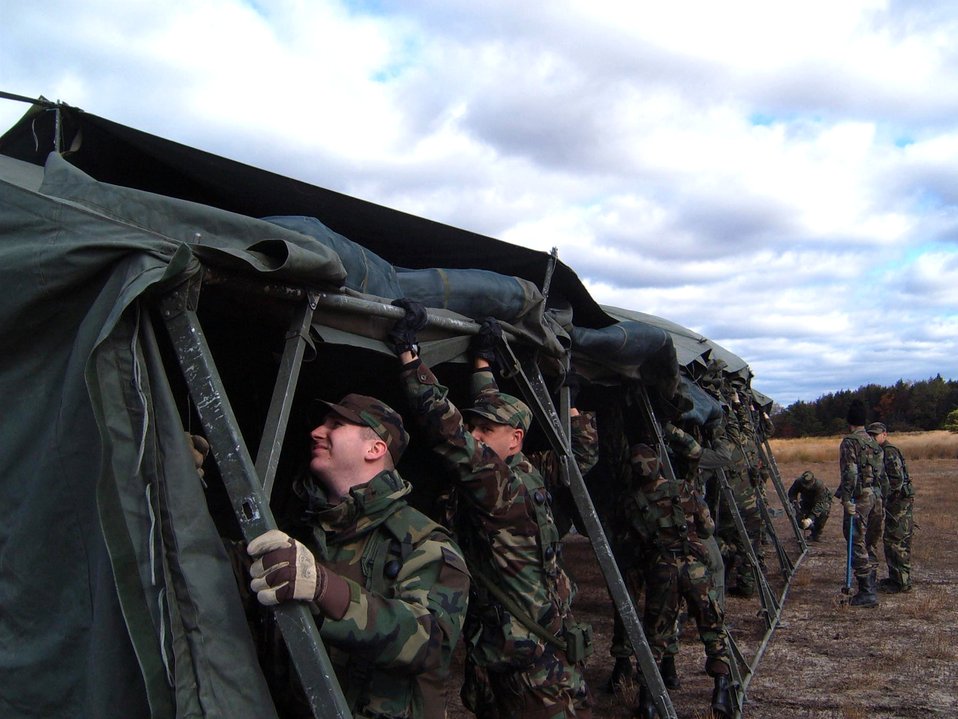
Eagle Flag 06-1

NAVAL AIR ENGINEERING STATION LAKEHURST, N.J. -- Airmen erect a tent here Oct. 23 as part of an Eagle Flag exercise simulating deployment to a bare base environment.